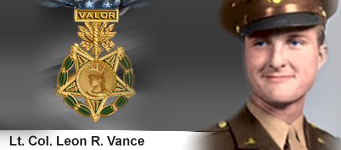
Lt. Col. Leon R. Vance, Medal of Honor recipient. Vance Air Force Base, Okla., is named in his honor.